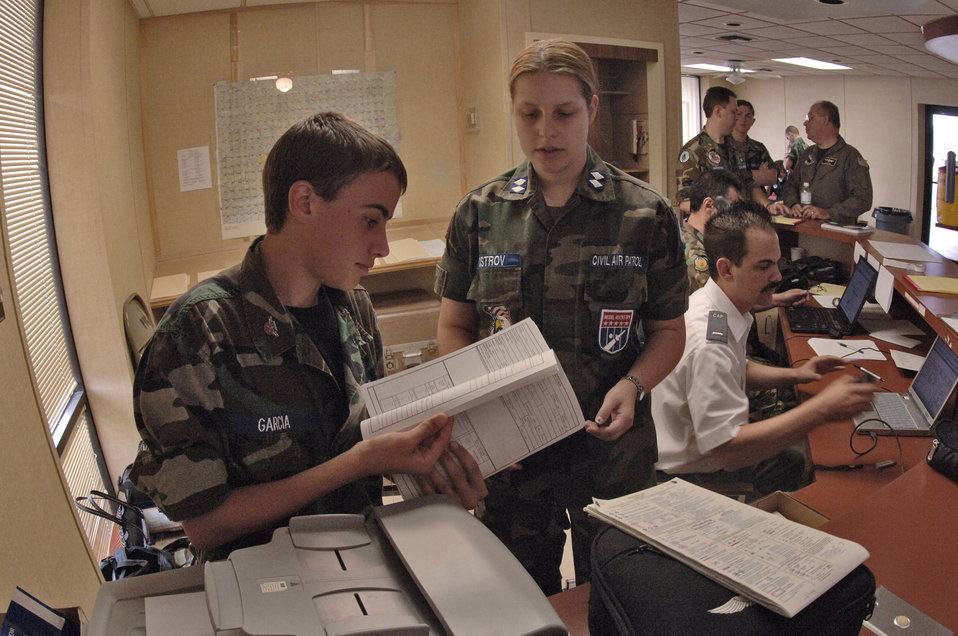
Civil Air Patrol responds

HOUSTON -- Cadet Lauren Ostrov (center), Cadet Airman Eric Garcia (left) and 1st Lt. Andrew Dice perform administrative duties at the Civil Air Patrol flight operations counter at the West Houston Airport on 26 Sept.